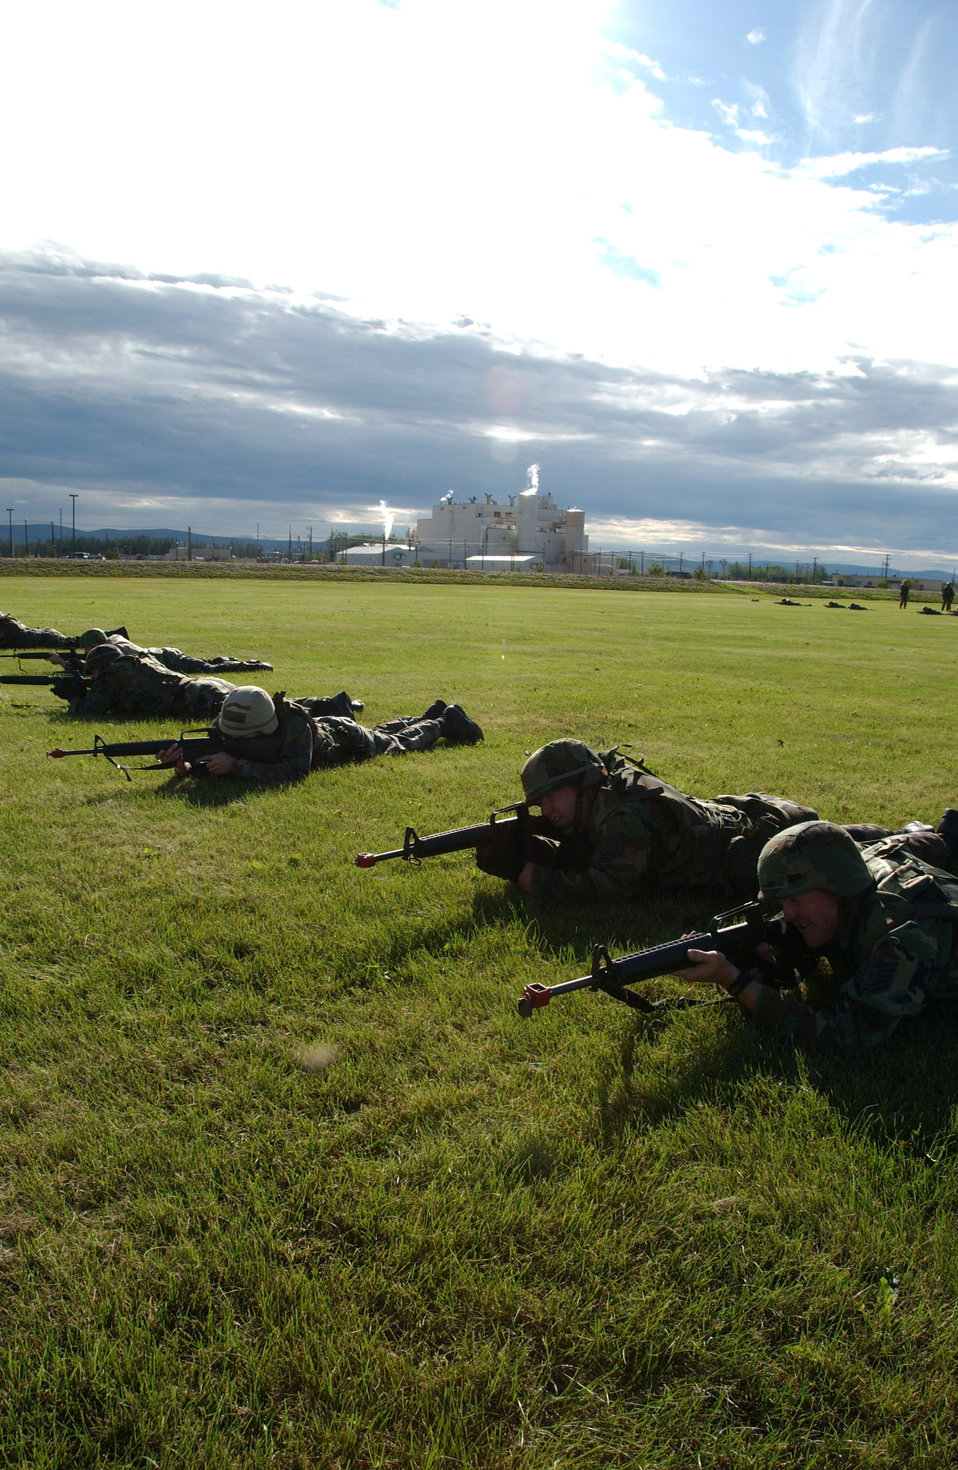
Air warriors train for deployment

Airmen practice low-crawling as a part of combat skills training Aug. 3 at Eielson Air Force Base, Alaska. This training gives Airmen the necessary skills to perform and adapt in a combat environment while deployed to an overseas location.